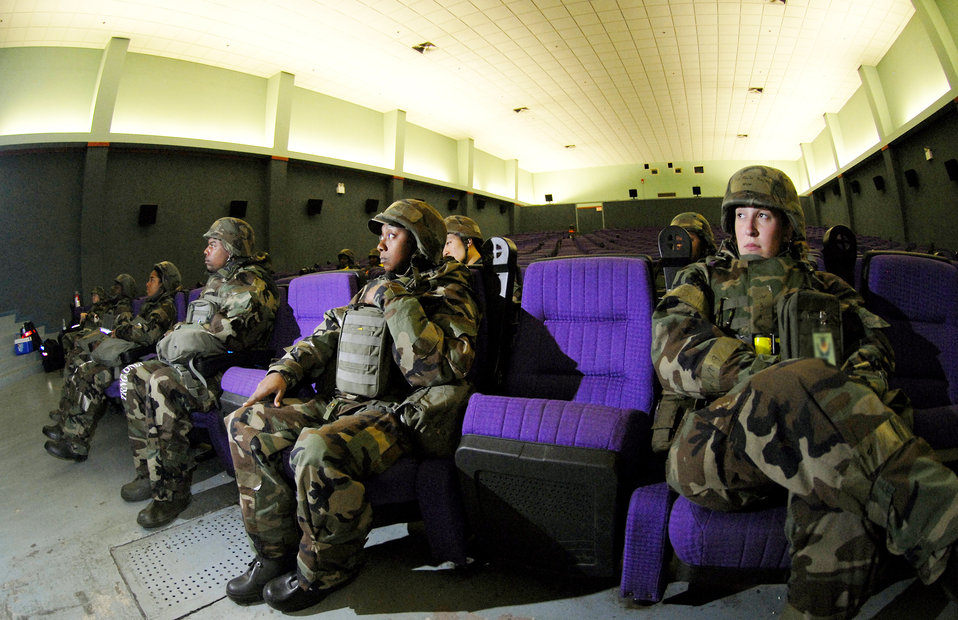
Osan Airmen provide force, equipment sustainment

Airmen from the 51st Fighter Wing receive briefings from during the base's Operational Readiness Exercise in July 2009 at Osan Air Base, South Korea.